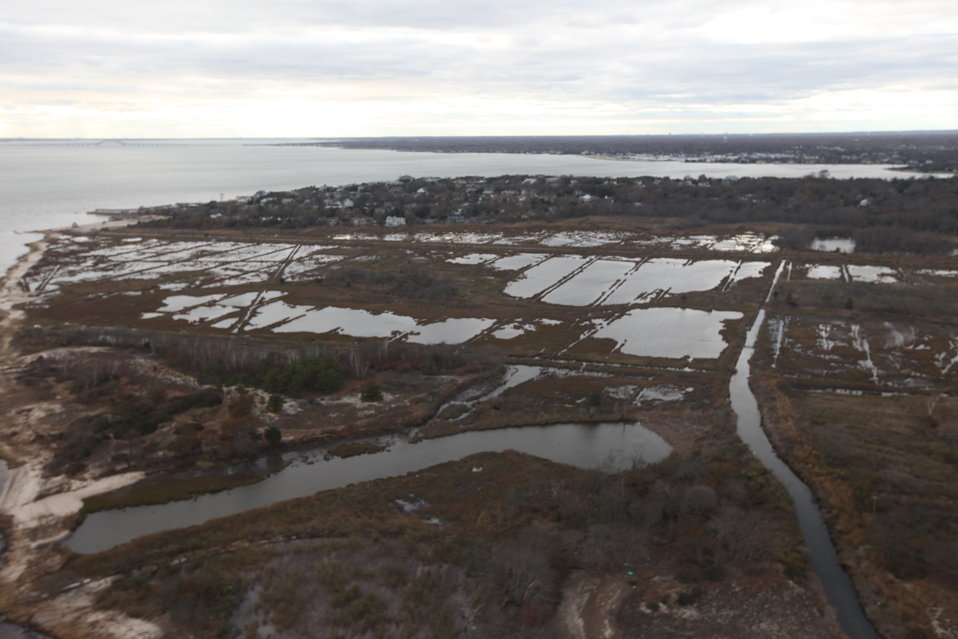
Aerial view of Seatuck National Wildlife Refuge (NY)

An aerial view of Seatuck National Wildlife Refuge, part of the Long Island National Wildlife Refuge Complex, in the aftermath of storm Sandy.Photo credit: Greg Thompson/USFWS